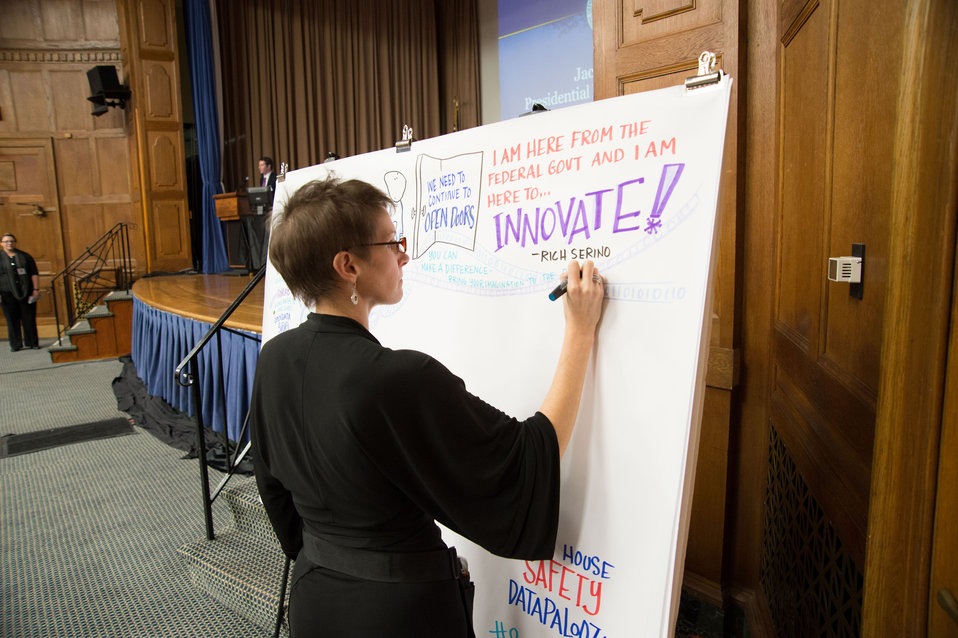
The White House Office of Science and Technology Policy, the White House Office of Public Engagement, the U.S. Department of Transportation, and the U.S. Department of Agriculture (USDA) host the second annual “Safety Datapalooza,” in the Jefferson Auditorium at USDA in Washington, D.C. on Tuesday, Jan. 14, 2014. The “Safety Datapalooza,” highlights innovators from the private, nonprofit, and academic sectors who have used freely available government data to build products, services, and apps that advance public safety in creative and powerful ways. This year’s meeting features new safety data resources in the areas of transportation, food, occupational and consumer product safety tools to improve disaster preparedness and emergency response. A series of panel discussions and brainstorming sessions are being held in which attendees will have the opportunity to discuss how technology and open data are being used to address public safety challenges across America.